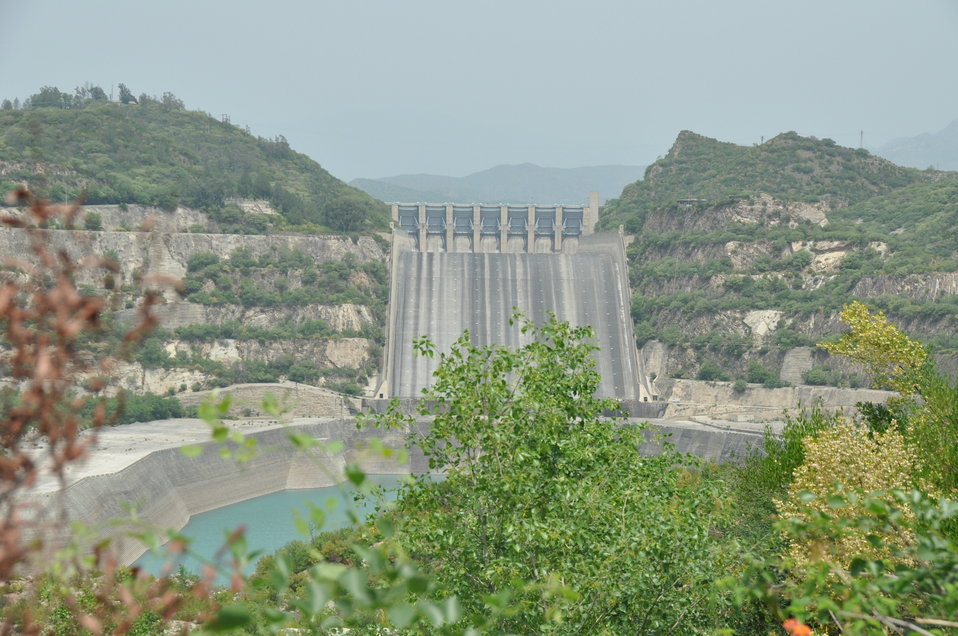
As part of the U.S. government's long-term commitment to improve energy supply in the country, USAID is supporting the completion of several high-impact energy sector projects in Pakistan. USAID is modernizing three generators in Tarbela Dam. In addition, we are helping construct Satpara Dam, providing support to Gomal Zam Dam, and upgrading the thermal plants at Jamshoro, Guddu, and Muzaffargarh. USAID is also partnering with the Government of Pakistan to reduce inefficiencies in the use of electricity and reform the sector so that it can grow with the economy and pay for regular maintenance.